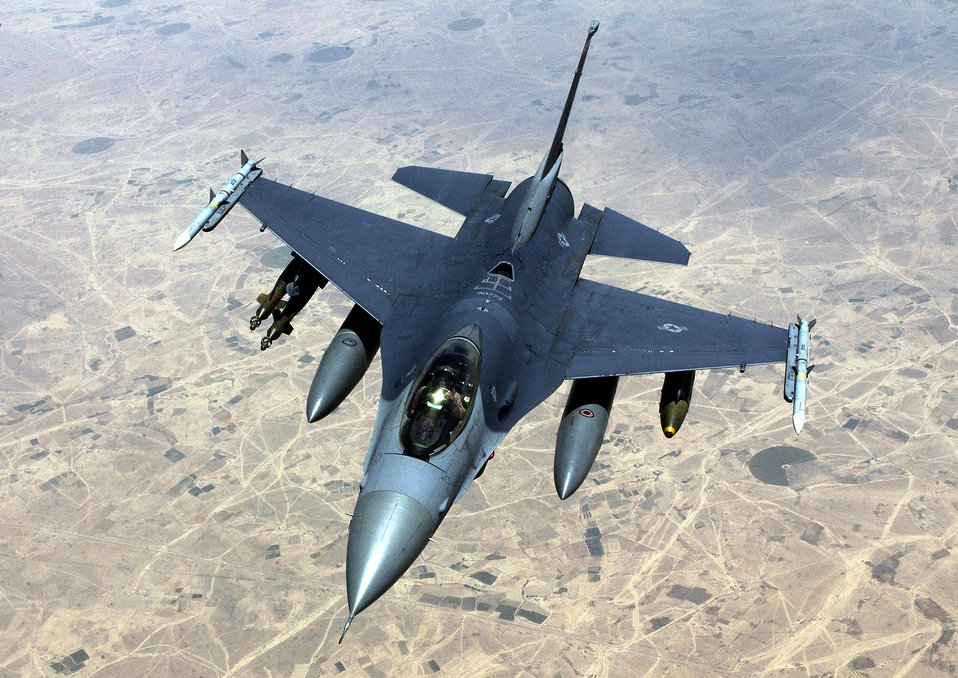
One billionth

SOUTHWEST ASIA -- An F-16 Fighting Falcon from the 555th Fighter Squadron at Aviano Air Base, Italy, flies away from a KC-135 Stratotanker on April 21 following an aerial refueling. The F-16 received the 1 billionth pound of fuel from Combined Forces Air Component Command refuelers since Jan. 30, 2003.